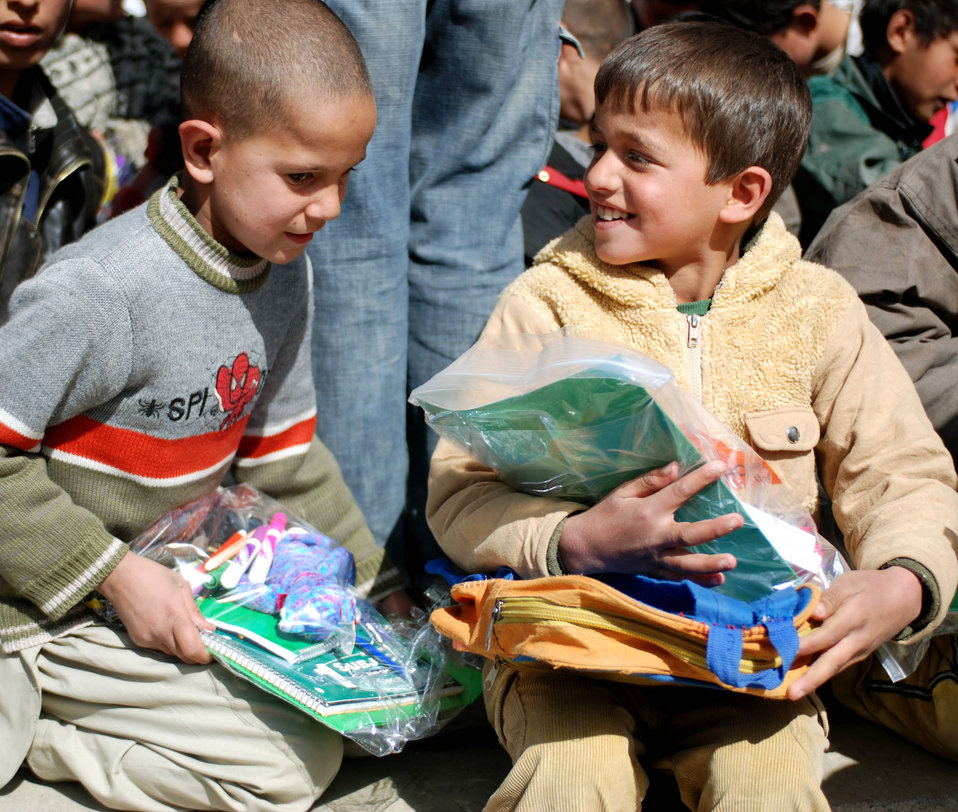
Afghan children get geared up for school

Afghan children from a school in downtown Kabul, Afghanistan get excited over the school supplies donated from coalition forces March 8. Airmen and Marines assigned to the Combined Security Transition Command were part of the community relations visit.